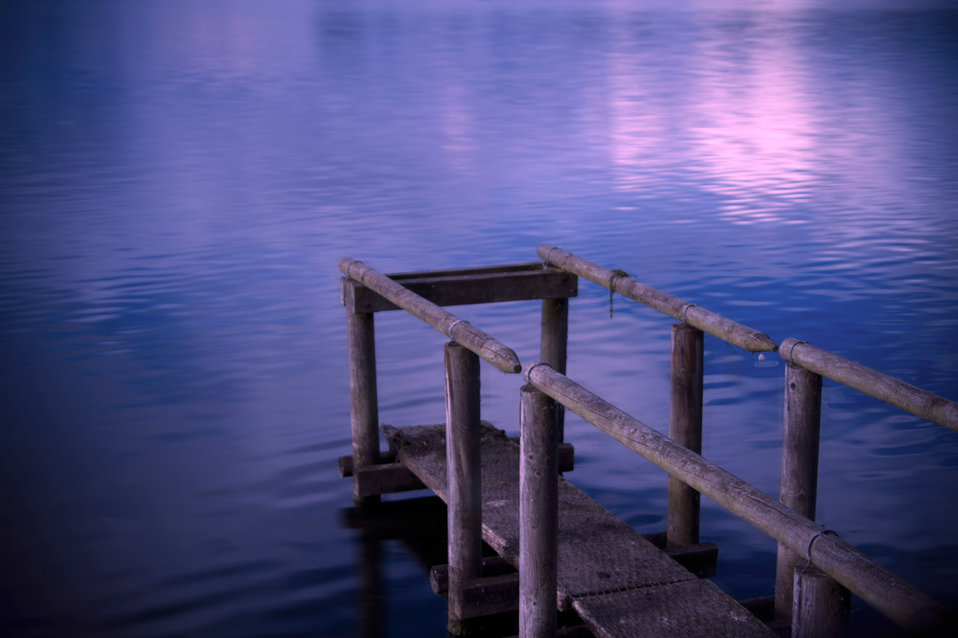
Sunset

Lake at sunset.